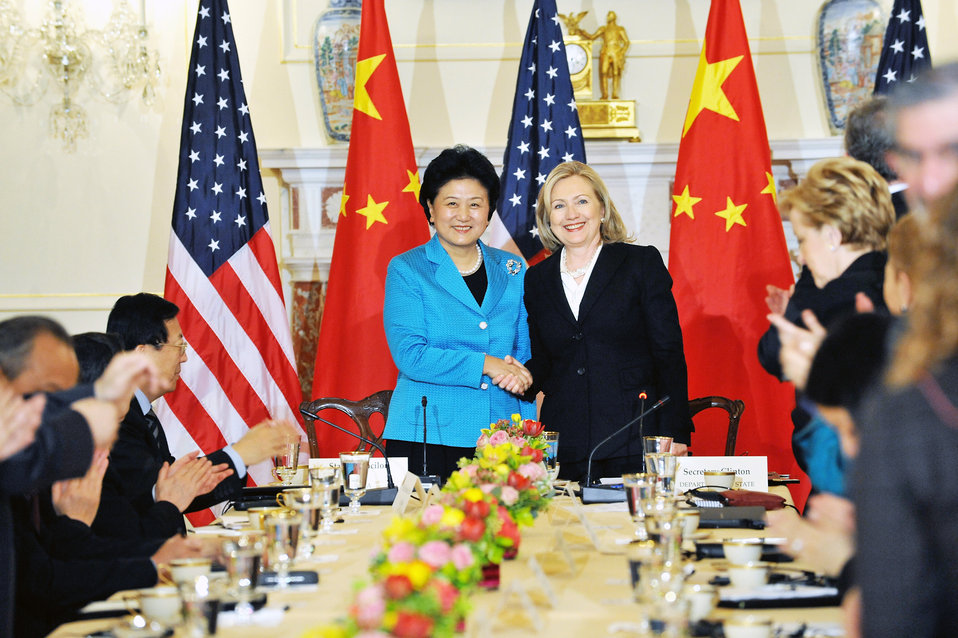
Secretary Clinton Shakes Hands With Chinese State Councilor Liu Yandong

U.S. Secretary of State Hillary Rodham Clinton shakes hands with Chinese State Councilor Liu Yandong at the closing session of the U.S.-China Consultation on People-to-People Exchange, at the U.S. Department of State in Washington, D.C., on April 12, 2011.